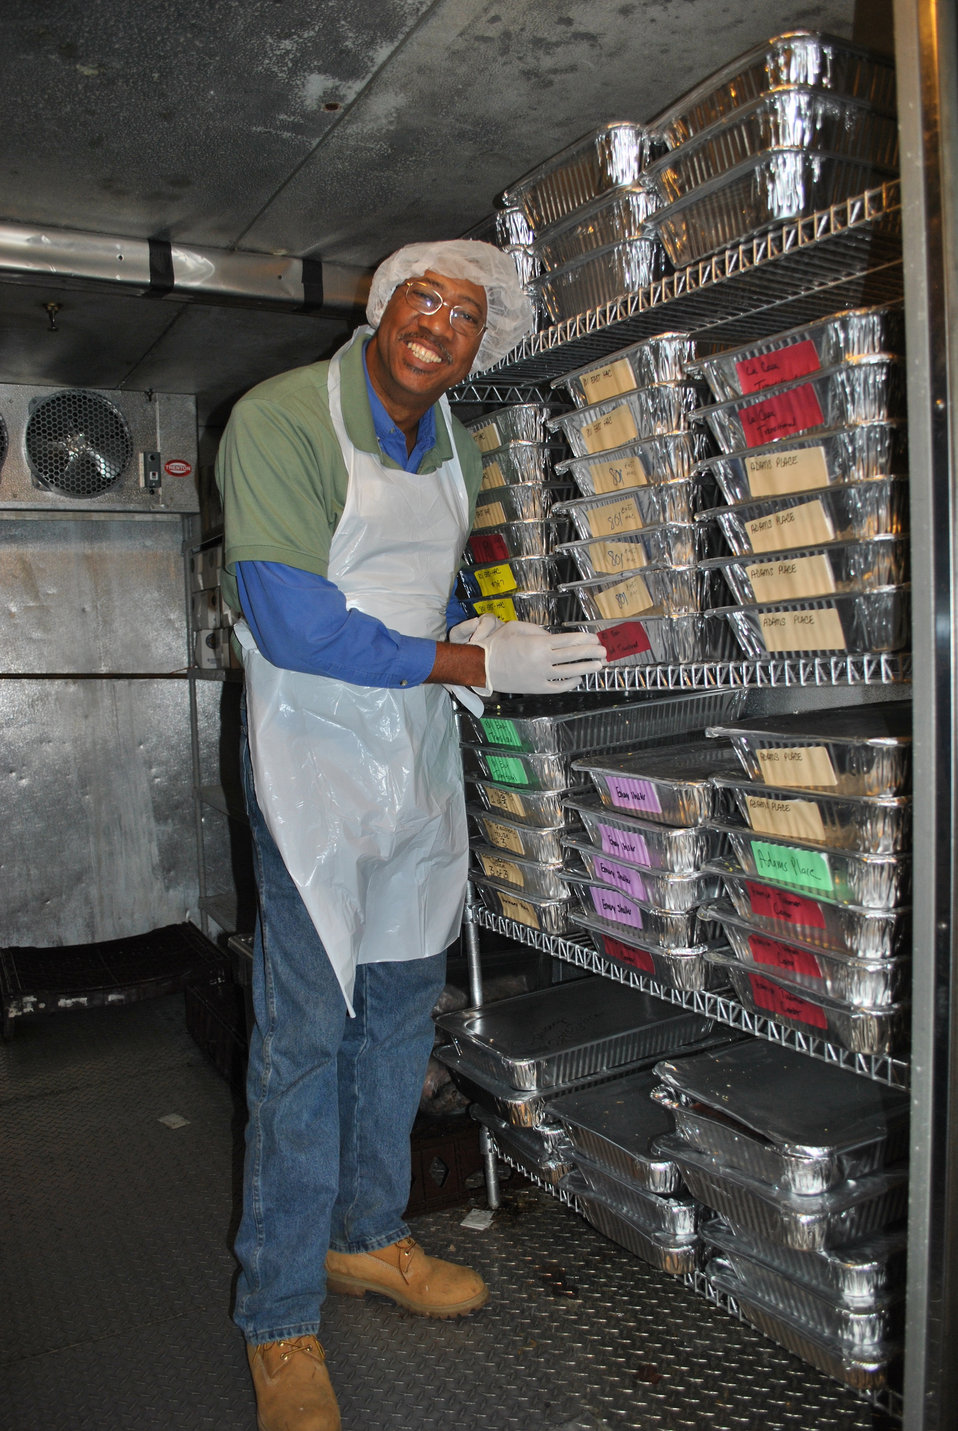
U.S. Department of Agriculture (USDA) retiree David Wiggins organizes meal trays inside the refrigerator in preparation for delivery at the DC Central Kitchen. The kitchen prepares over 5,000 meals every day that are distributed to partner agencies across the Washington metropolitan area.